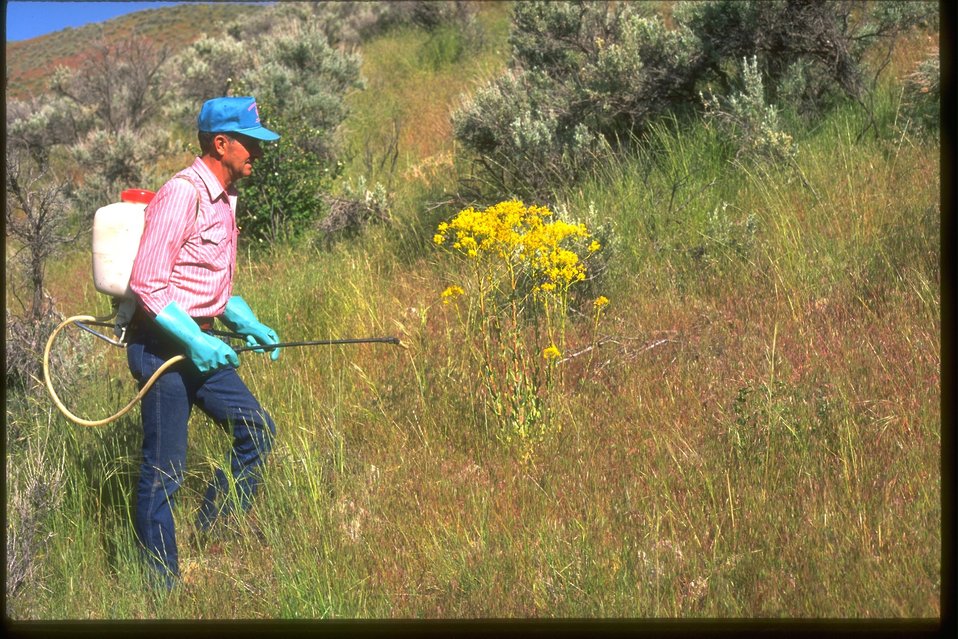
Ken Tupper, county weed supervisor, spraying weeds on BLM land in Rodgersbury, Washington, along the Snake River.